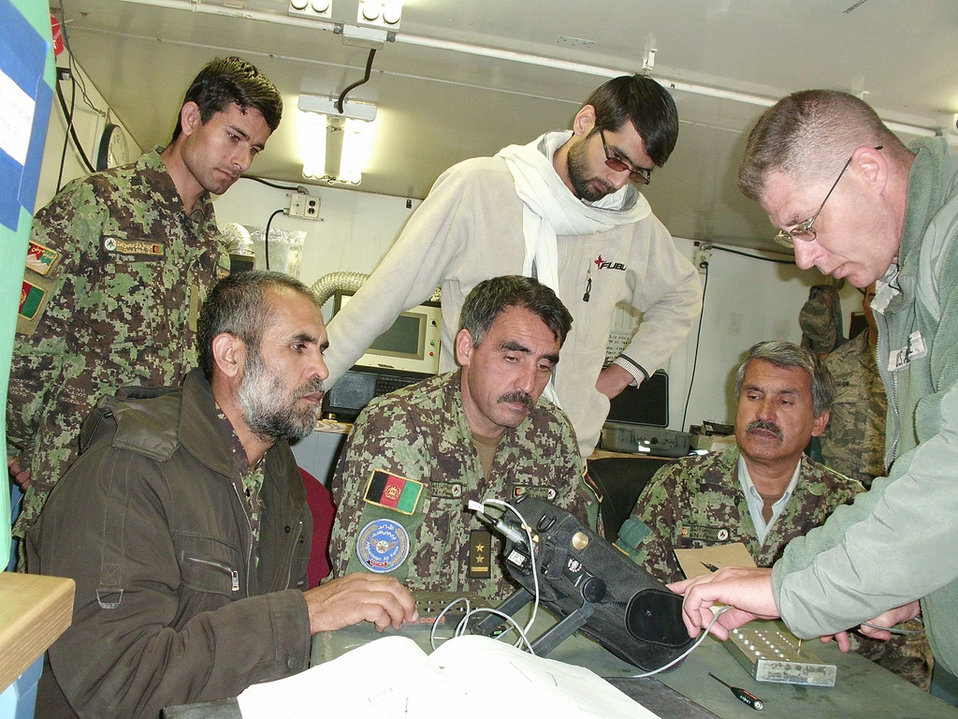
Air Force technicians showcase abilities to Afghan maintainers

An Air Force non-destructive inspection technician demonstrates a technique to Afghan aircraft maintainers at Kandahar Air Base, Afghanistan.